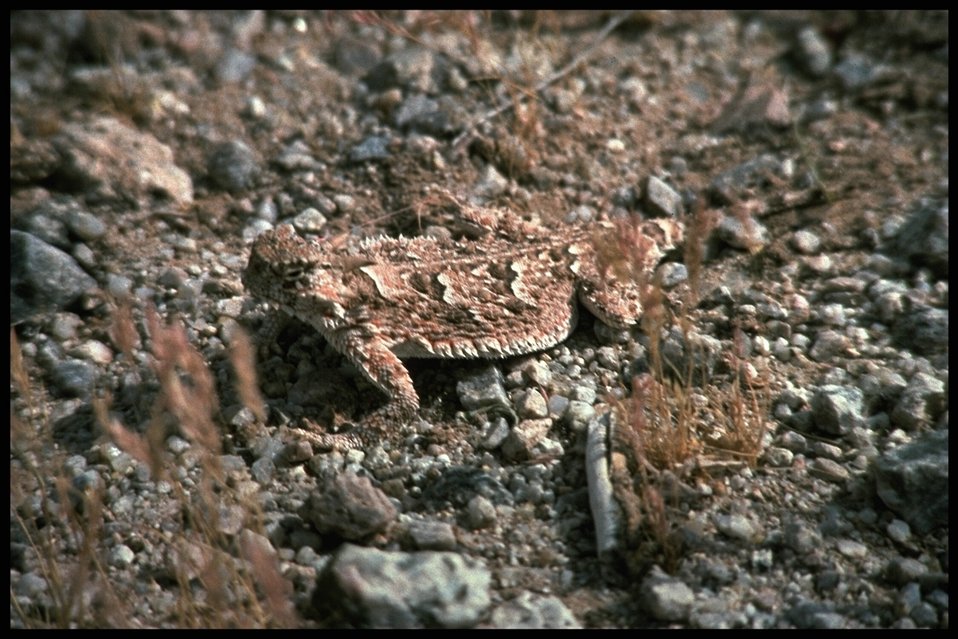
A lizard is a common sight even in populated suburban areas.